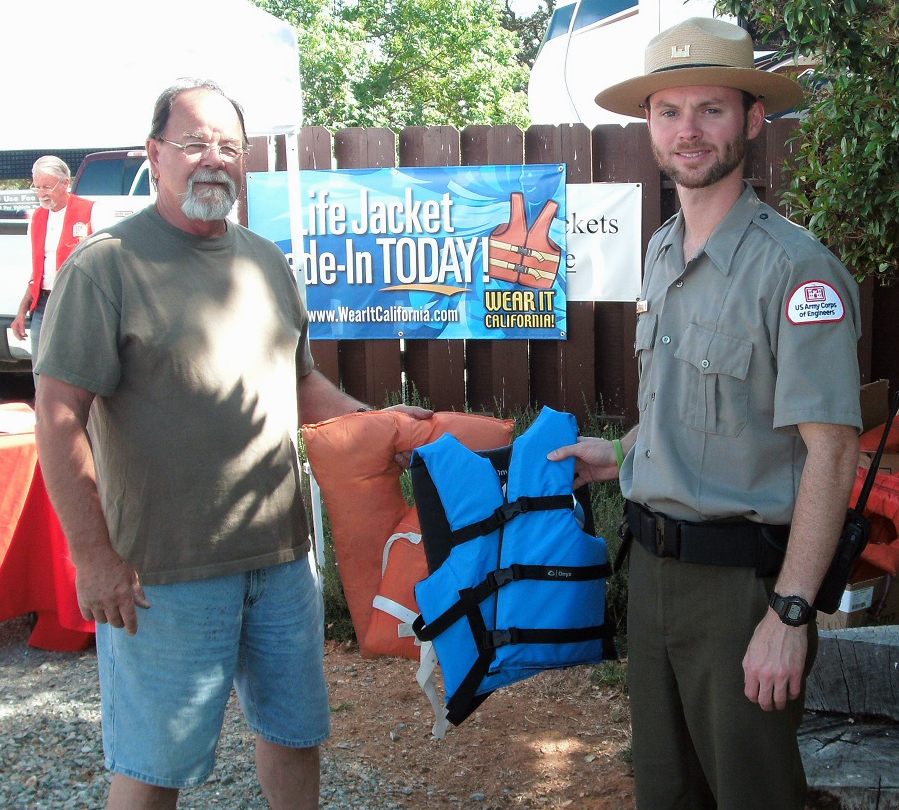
Life Jacket Trade-in Day 2013

Kevin Franken, park ranger at the U.S. Army Corps of Engineers Sacramento District facility at New Hogan Lake, presents a brand new life jacket in trade for a used item during Life Jacket Trade-in Day, May 24, 2013 at the park near Valley Springs, Calif. The event was sponsored by the California Department of Boating and Waterways.